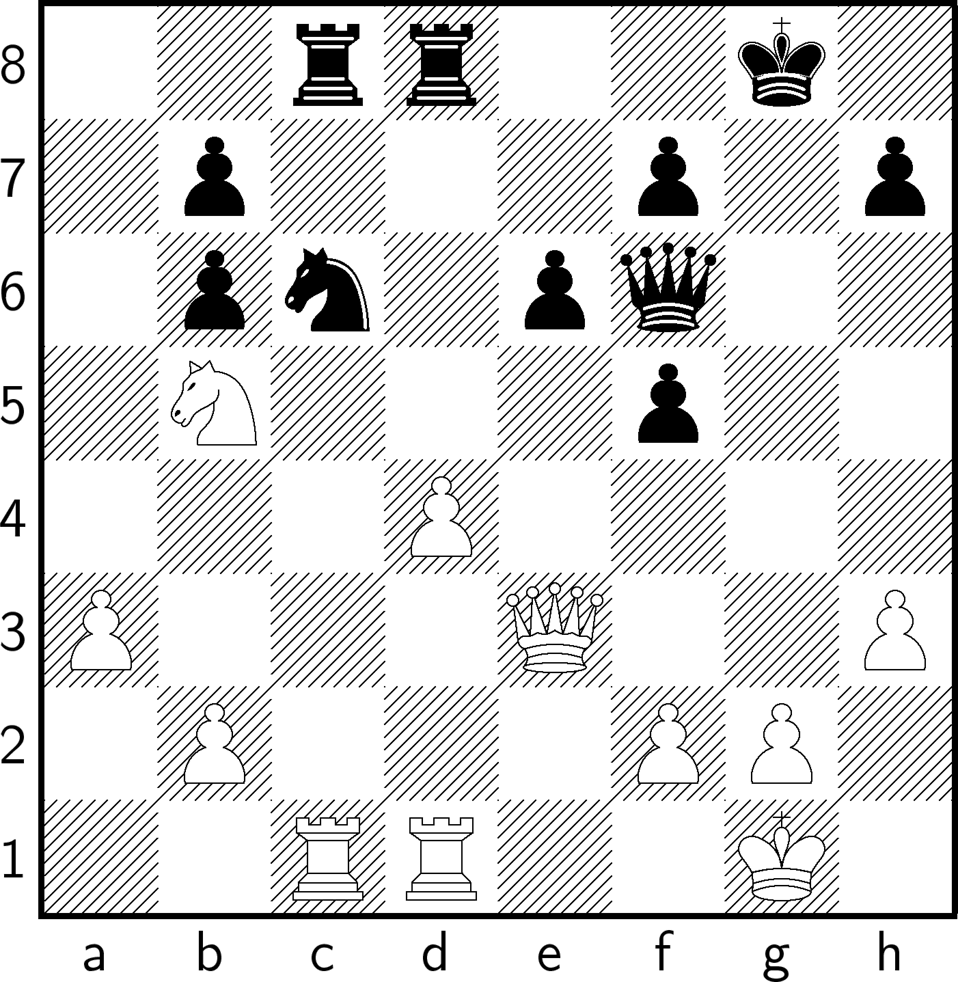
, latexed by myself. Source: documentclass{article} usepackage[ps,styleC]{skak} hoffset -1.8in voffset -1.8in textheight 3in textwidth 3in begin{document} thispagestyle{empty} fenboard{2rr2k1/1p3p1p/1pn1pq2/1N3p2/3P4/P3Q2P/1P3PP1/2RR2K1 w - - 0 0} $$showboard$$ end{document}